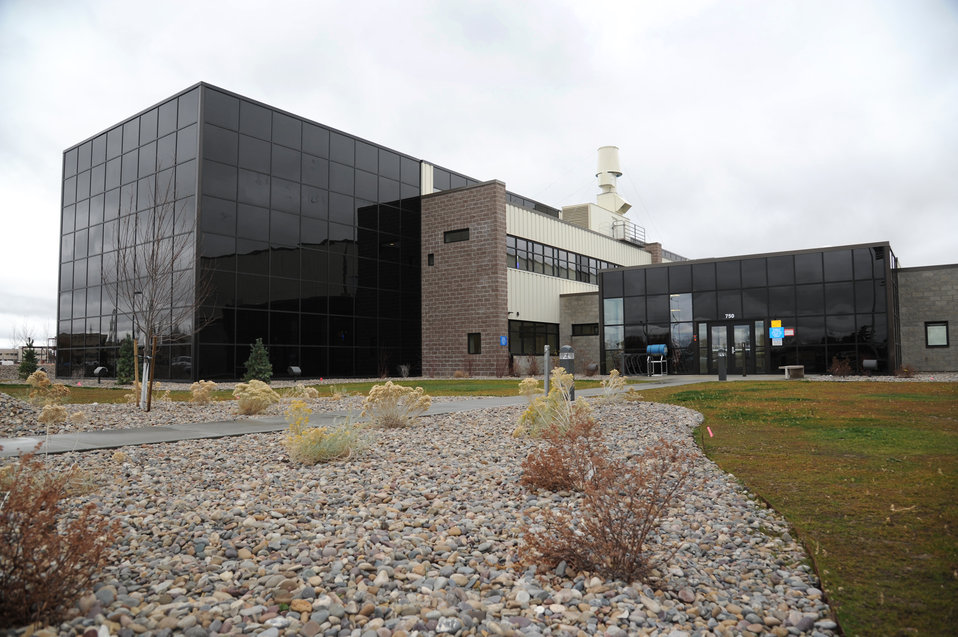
Idaho National Laboratory's Energy Systems Laboratory.

The facility will provide work space and tools to principal investigators that conduct research and development to reduce technical and economic risks associated with the deployment of new energy technologies.